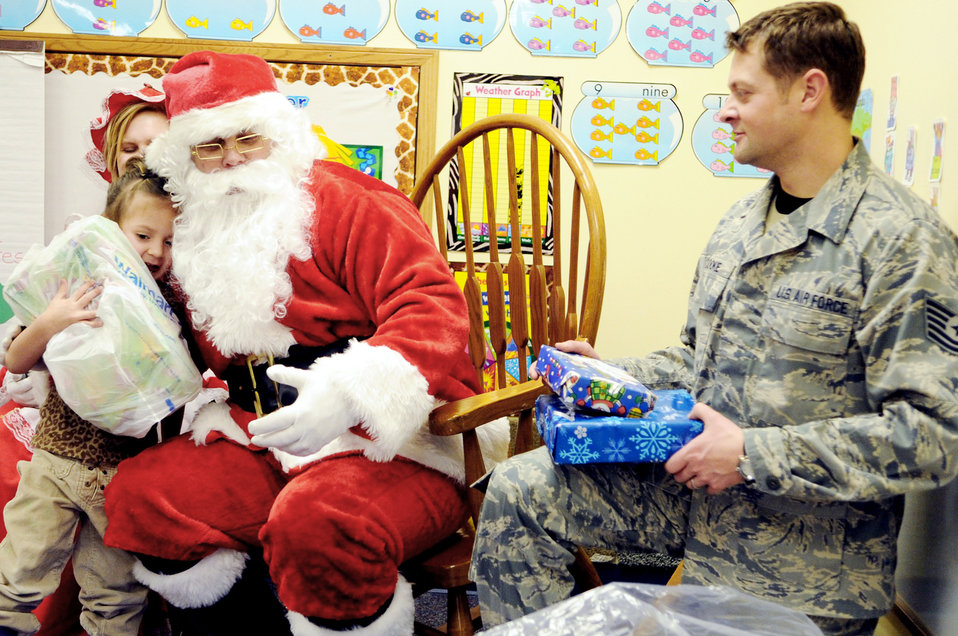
Thank you, Santa

Santa gets a hug while Tech. Sgt. Justin Cooke from the 28th Operations Group helps distribute presents at the Youth and Family Services child care center in Rapid City, S.D., Dec. 17, 2009. The center staff provided the names and ages of children in their program to nearby 28th OG members at Ellsworth Air Force Base, who then purchased and wrapped gifts for every child.